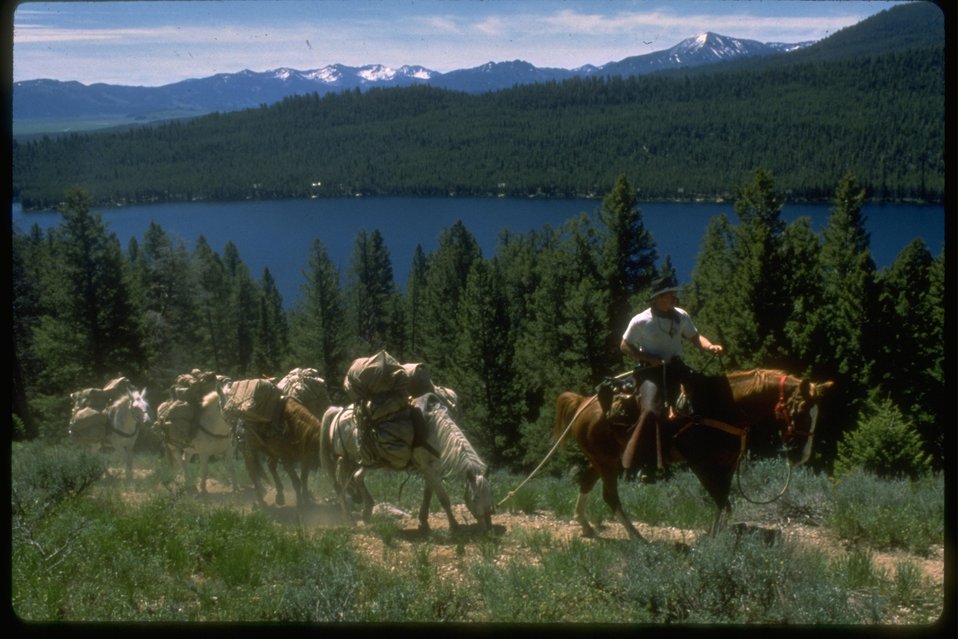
Pack train in Idaho.